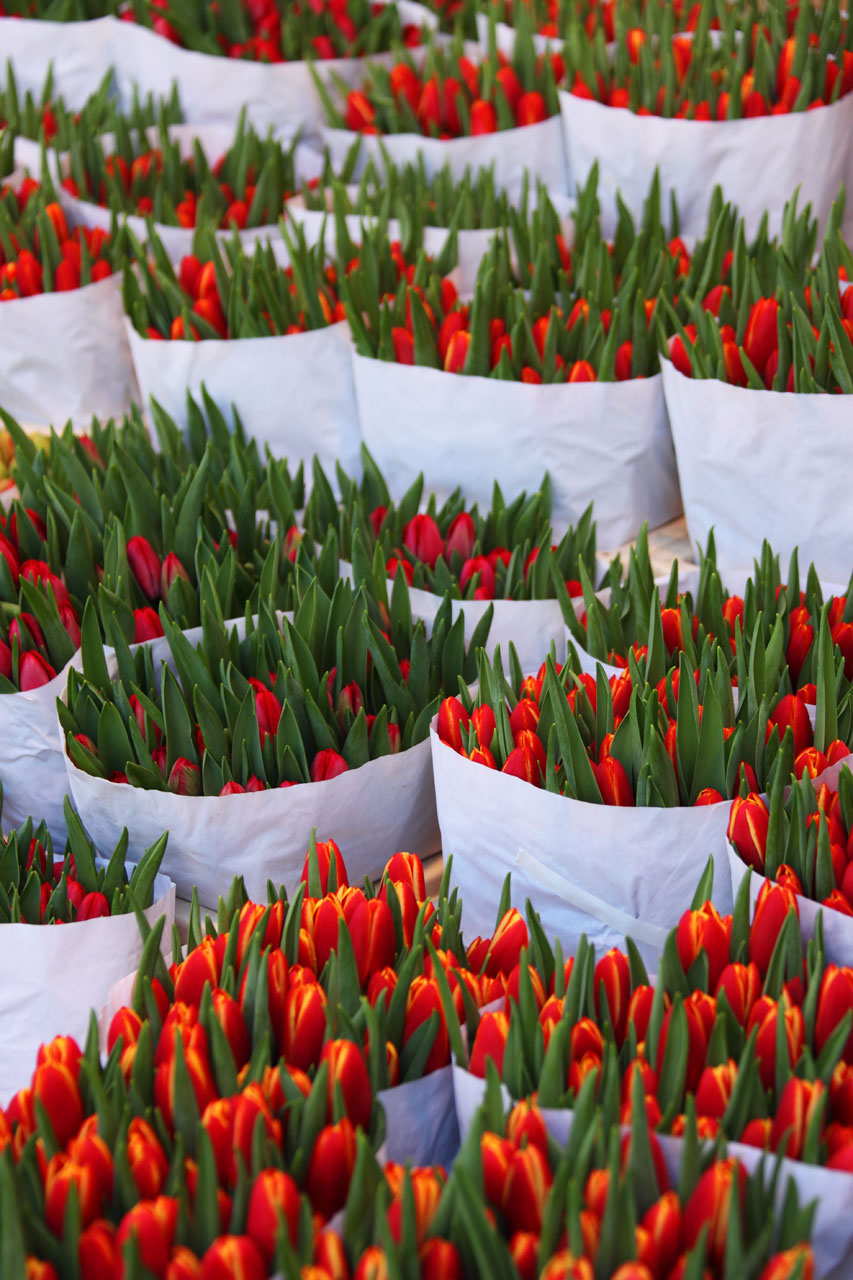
Tulips in bags

Red tulips in white paper bags on local market.